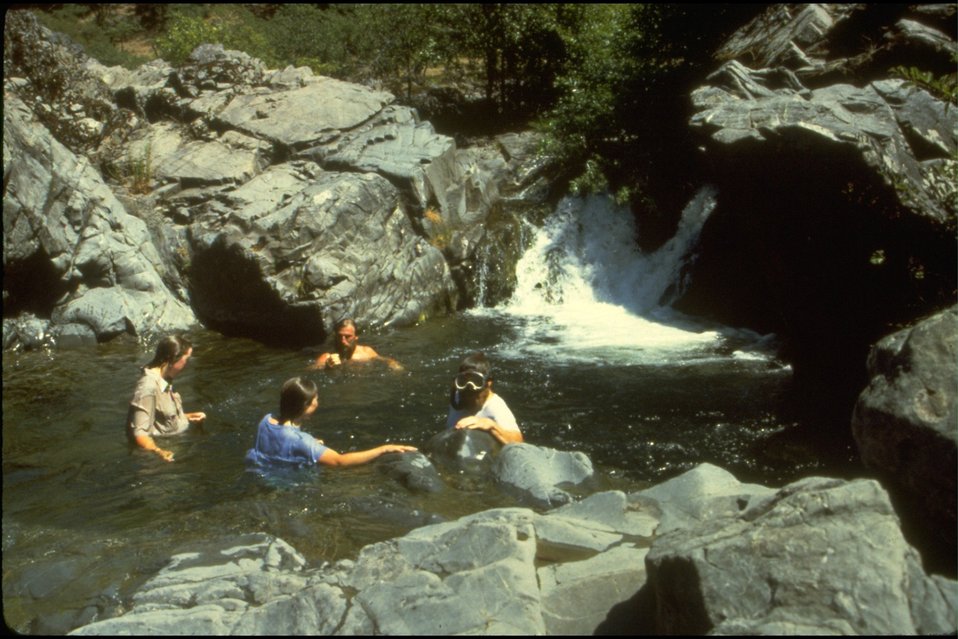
Rogue River - Howard Creek, wild section. Swimming in pool.